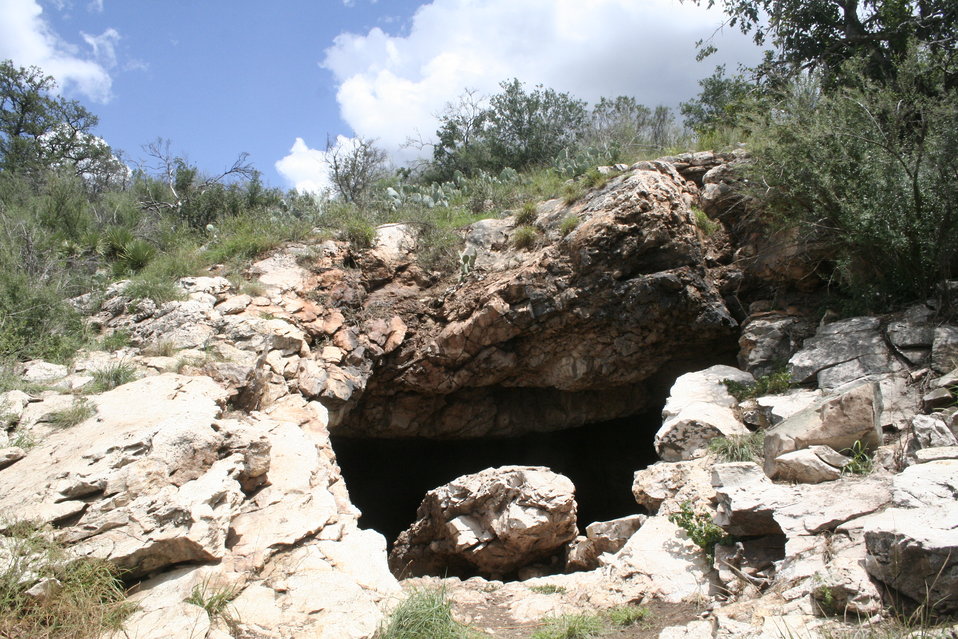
Davis Cave entrance